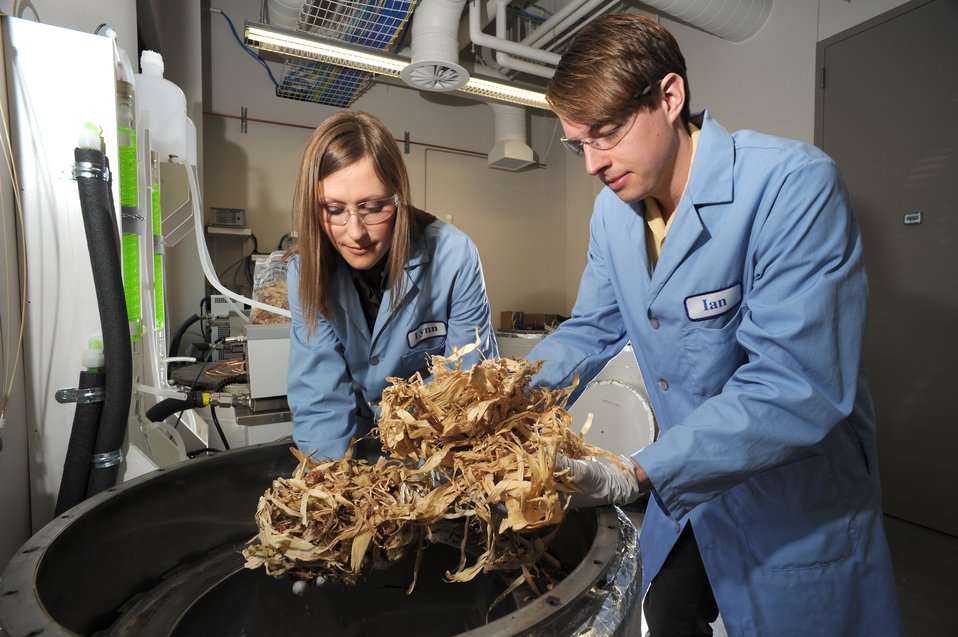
Idaho National Laboratory researchers are studying ways to economically process, transport and formulate raw biomass that will feed into a biofuels production facility.